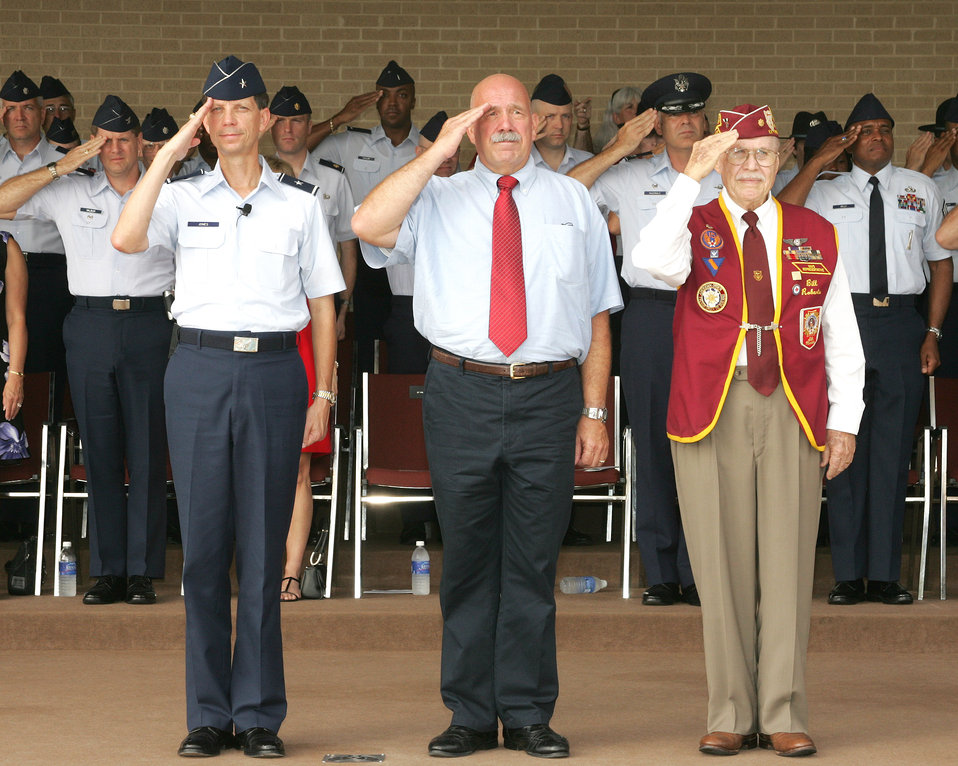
Basic training graduation ceremony focuses on POW/MIA Day

Two former POWs joined the training wing commander as reviewing officials during the basic military training graduation ceremony Sept. 15 at Lackland Air Force Base, Texas. Standing with Brig. Gen. Darrell D. Jones, 37th Training Wing commander, are retired Col. Joseph Milligan and retired Maj. Bill Roberts. Colonel Milligan was shot down May 20, 1967, while flying his 113th combat mission in an F-4 Phantom over North Vietnam. Major Roberts was flying in a B-17 Flying Fortress during World War II when he was shot down over Czechoslovakia.